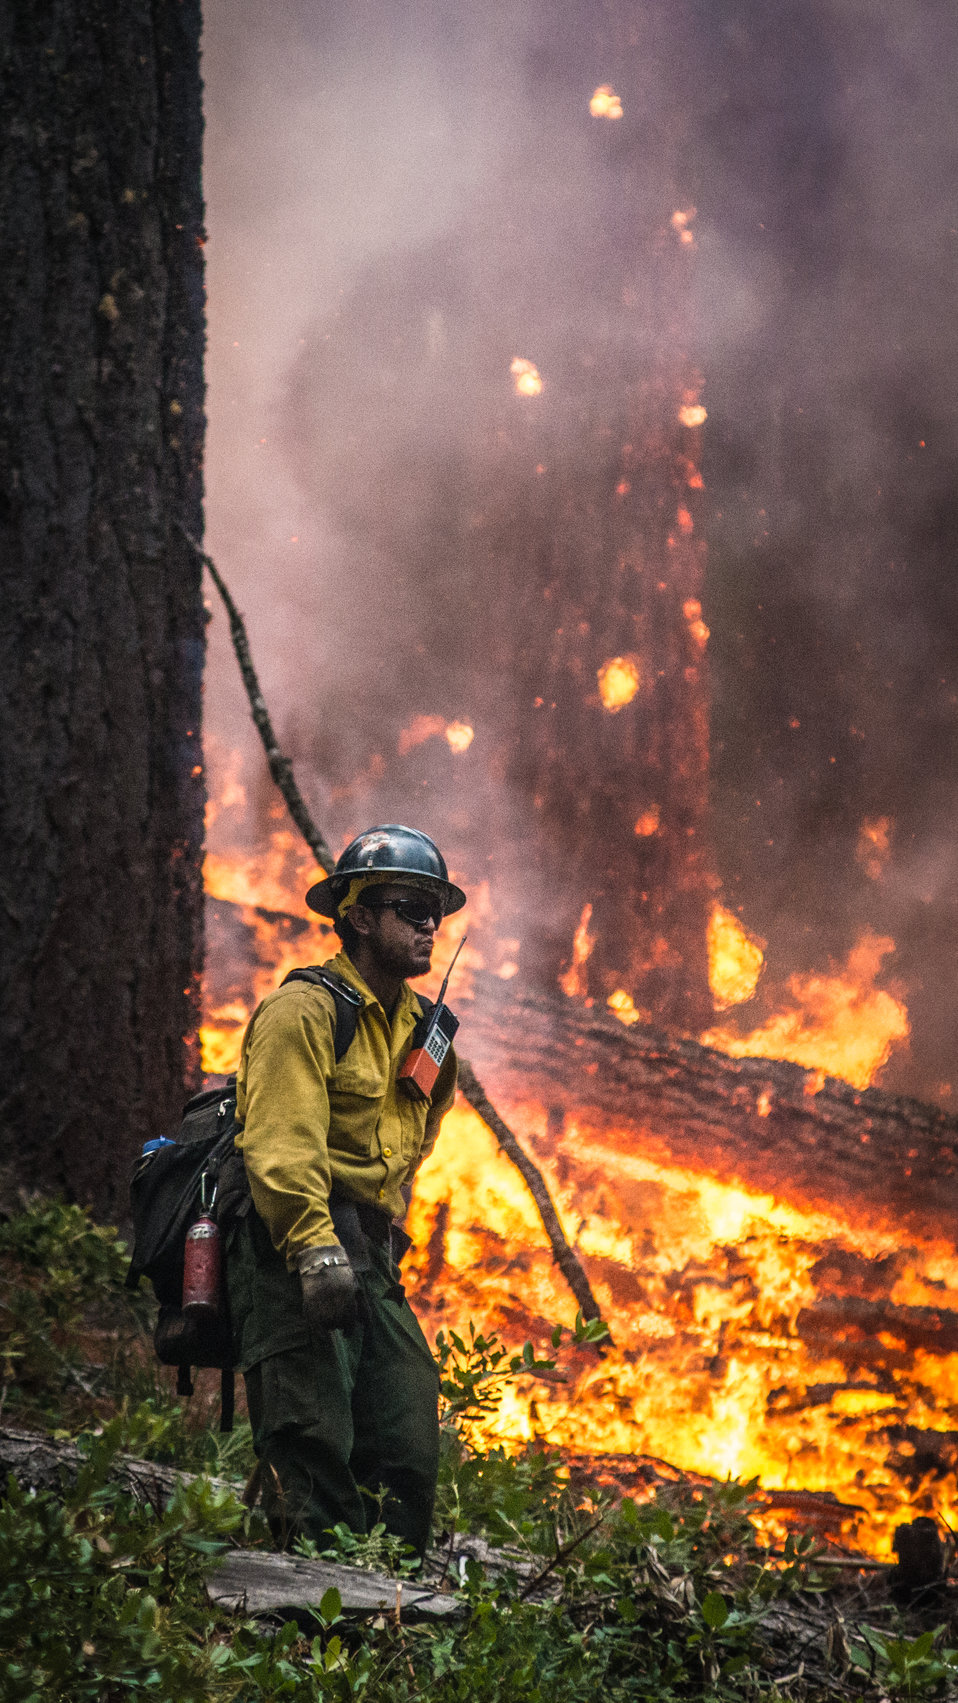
Geronimo Interagency Hotshot Crew, Department of the Interior (DOI) Indian Affairs (IA) Bureau of Indian Affairs (BIA) San Carlos Agency in Arizona; on assignment at the Big Windy Complex Wildlands Fire, approximately 15 miles west of Interstate-5 and East Northeast of Galice, Oregon, conducts a prescribed burn 'burnout' operation to help stop the main fire that may head toward this roadway, on Friday, Aug 9, 2013. The primary mission of the Interagency Hotshot Crews (IHC) is to provide a safe, organized, mobile and highly skilled hand crew for all phases of wildland fire suppression. The arduous duties and specialized assignments required of IHC personnel require uniform staffing, certification, training, equipment, communications, transportation, organization, and qualifications that adhere to interagency standards and guidelines.